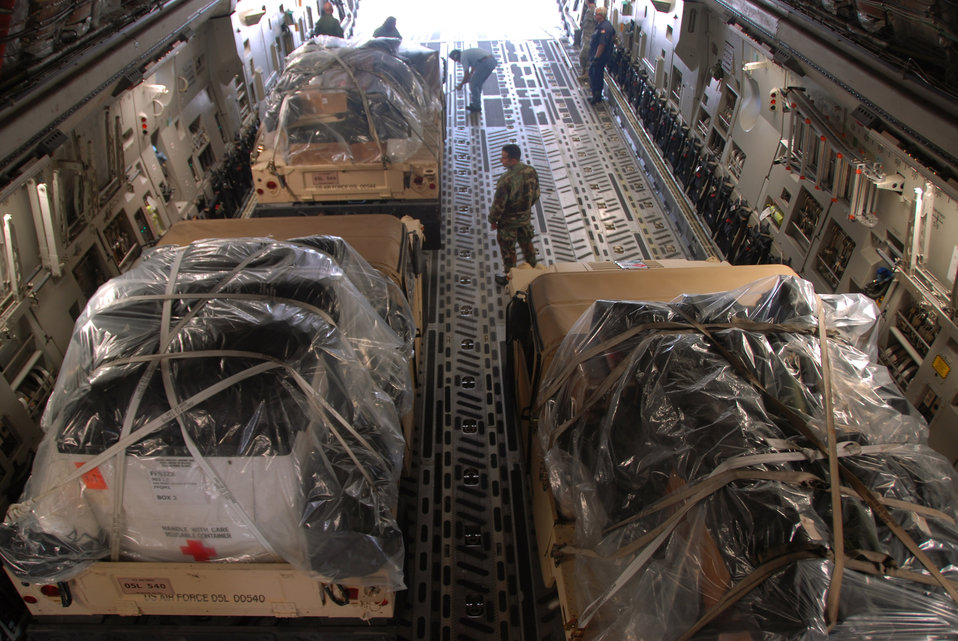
Altus crews help prepare for Hurricane Ike

Humvees and humanitarian supplies are loaded on a C-17 Globemaster III Sept. 10 at Kelly Field, Texas. Supplies were flown to McAllen, Texas, to help prepare for the arrival of Hurricane Ike. The C-17 is assigned to the 58th Airlift Squadron at Altus Air Force Base, Okla.